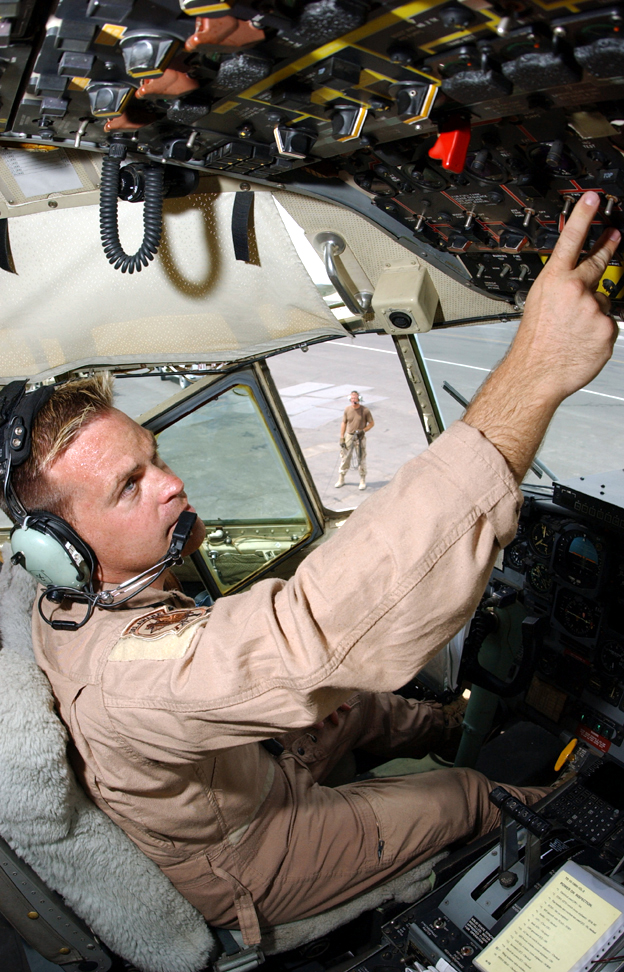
Preflight

OPERATION IRAQI FREEDOM -- Master Sgts. Tom Rutt (foreground) and Scott Nybakken work in unison ensuring a C-130 Hercules is ready for an airlift mission to Iraq. Rutt is a flight engineer and Nybakken is a crew chief. Both airmen are assigned to the Delaware Air National Guard's 166th Airlift Wing. Airmen endure temperatures of at least 115 degrees daily on the flightline at their forward-deployed location in Southwest Asia.